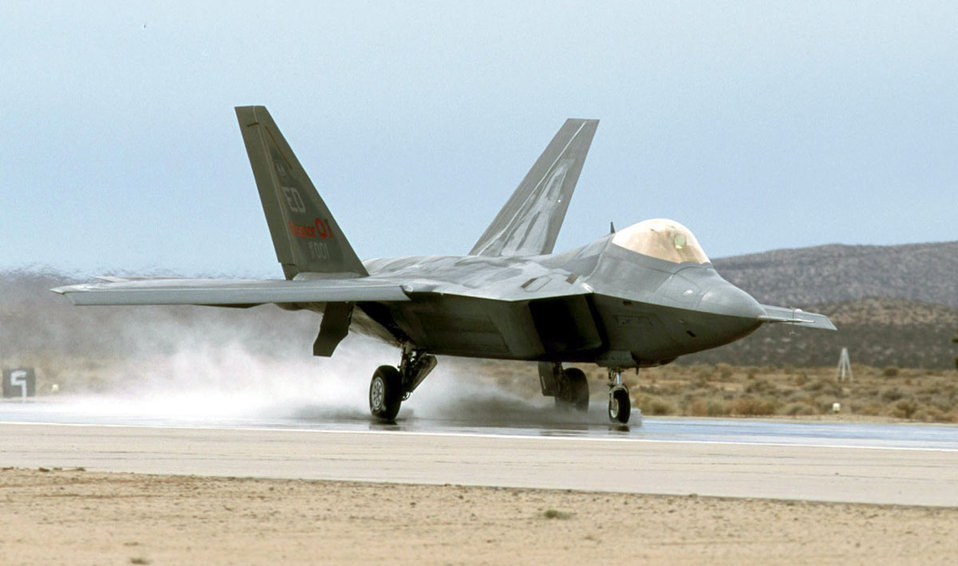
Wet-runway testing

EDWARDS AIR FORCE BASE, Calif. -- Raptor 4001 undergoes wet-runway testing during a rare rainy day here in the Mojave Desert. The F/A-22 was tested at speeds of 30, 60 and 90 knots. This test is just one of thousands that the F/A-22 Combined Test Force is putting the Raptor through during the most extensive test program that any fighter aircraft has undergone.